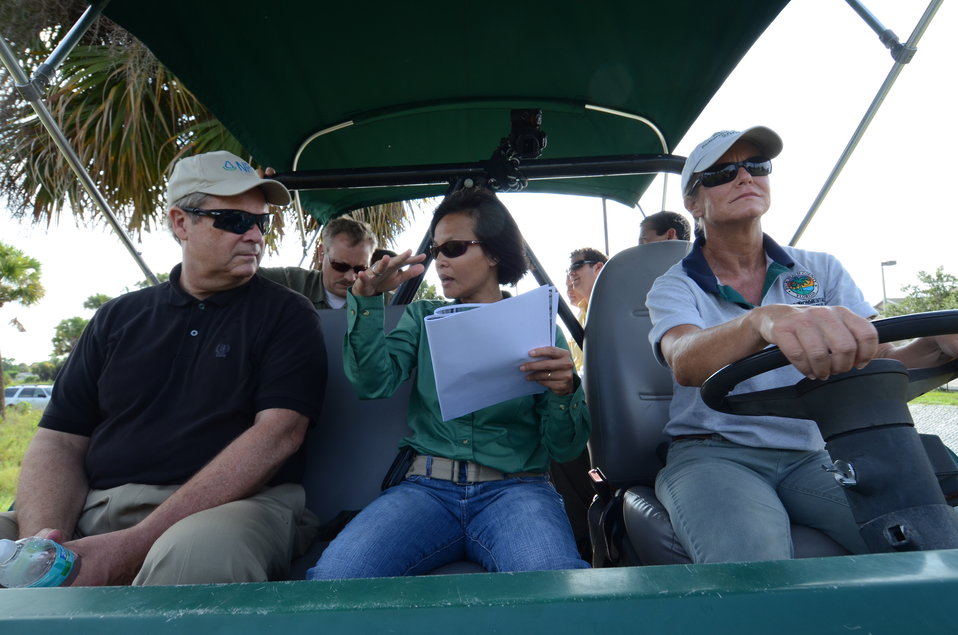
Agriculture Secretary Tom Vilsack rides along with USDA, National Resources Conservation Service Nga Watts and Palm Beach County Board of County Commissioners, Department of Environmental Resource Management, Natural Resources Stewardship Environmental Program Supervisor Brenda Hovde (driving) to see the Winding Waters Natural Area, FL, on Thursday, August 8, 2011.